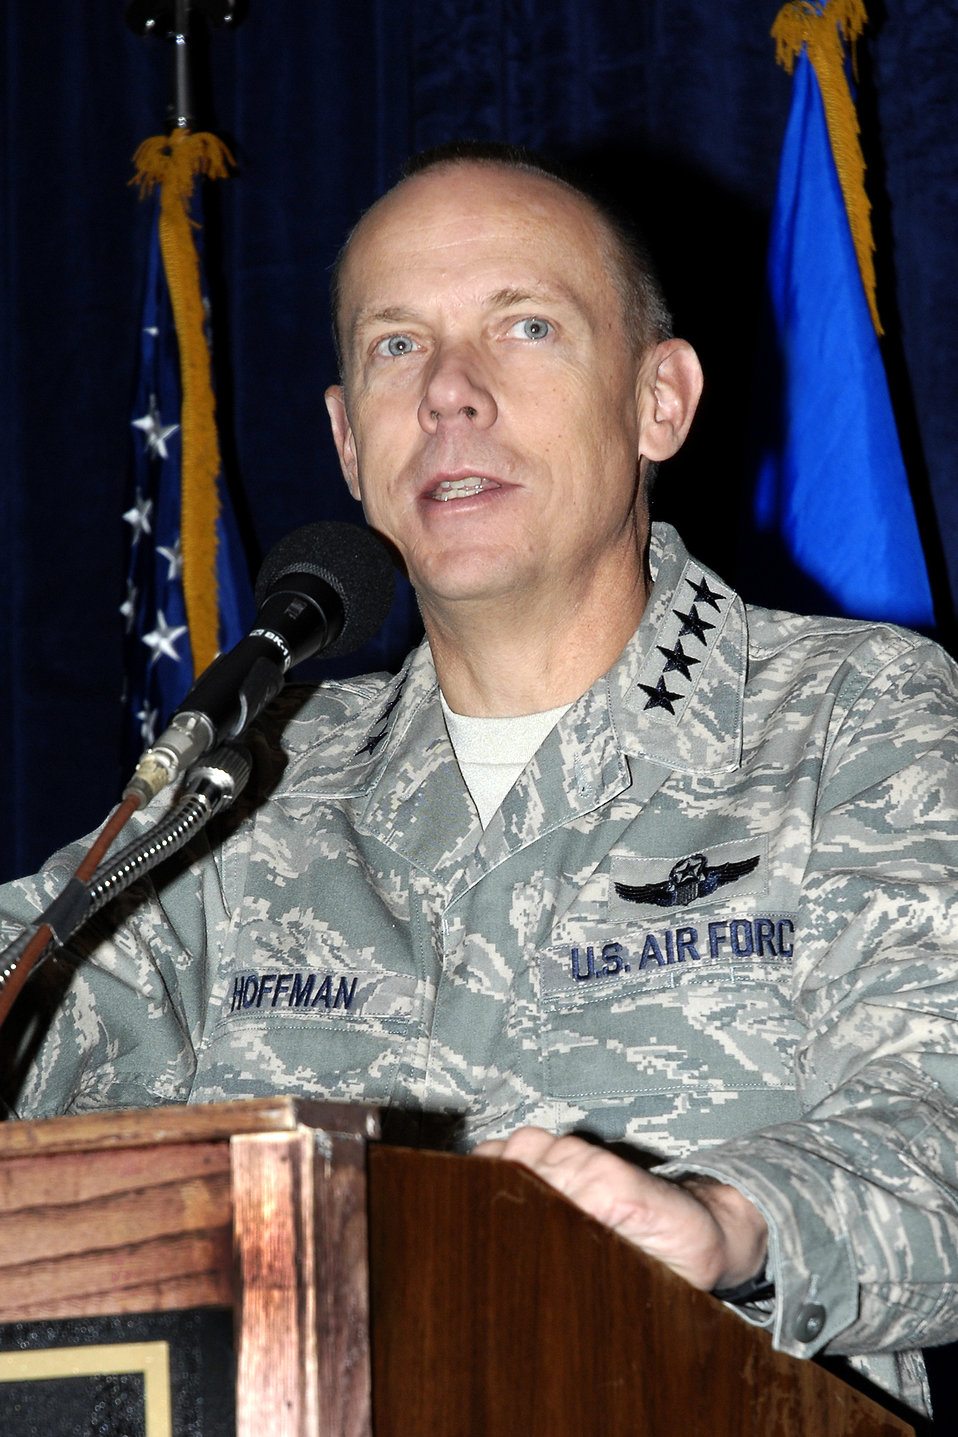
Changes ahead for Air Force acquisition

Gen. Donald J. Hoffman addresses Air Force Materiel Command and defense industry leaders at an Air Force Association Technology Symposium Sept. 3, 2009, at Wright-Patterson Air Force Base, Ohio. General Hoffman is the AFMC commander.